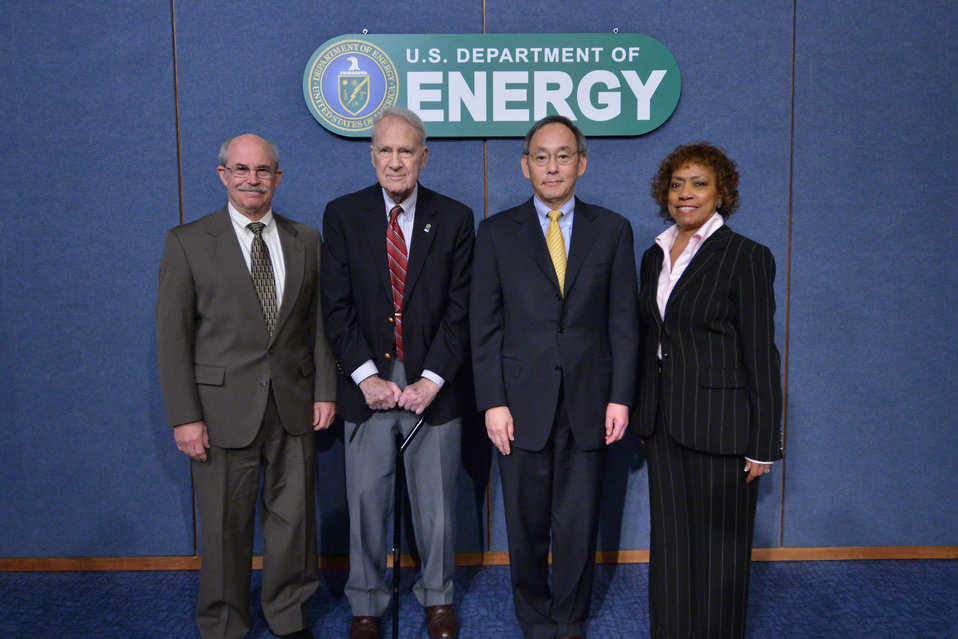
1 FE

Charter employees from the Office of Fossil Energy with Secretary Steven Chu, current Secretary of Energy, and Secretary James Schlesinger, first Secretary of Energy.